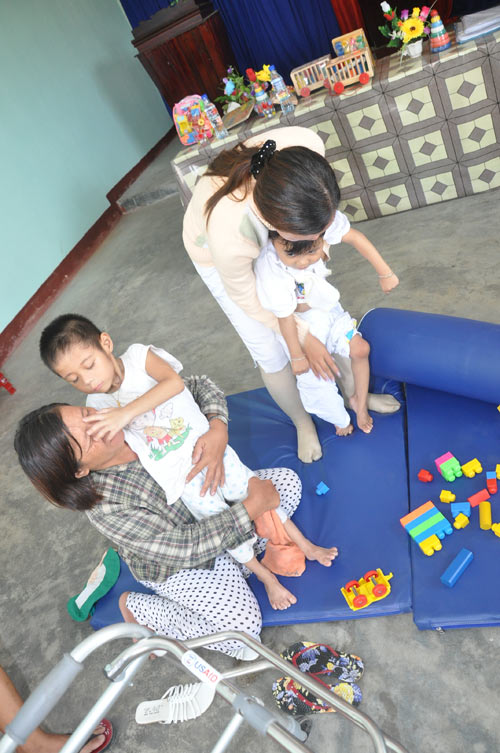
Community Rehabilitation Unit, Danang

Children and adults with disabilities regardless of cause receive support at rehabilitation centers in Danang, Vietnam.